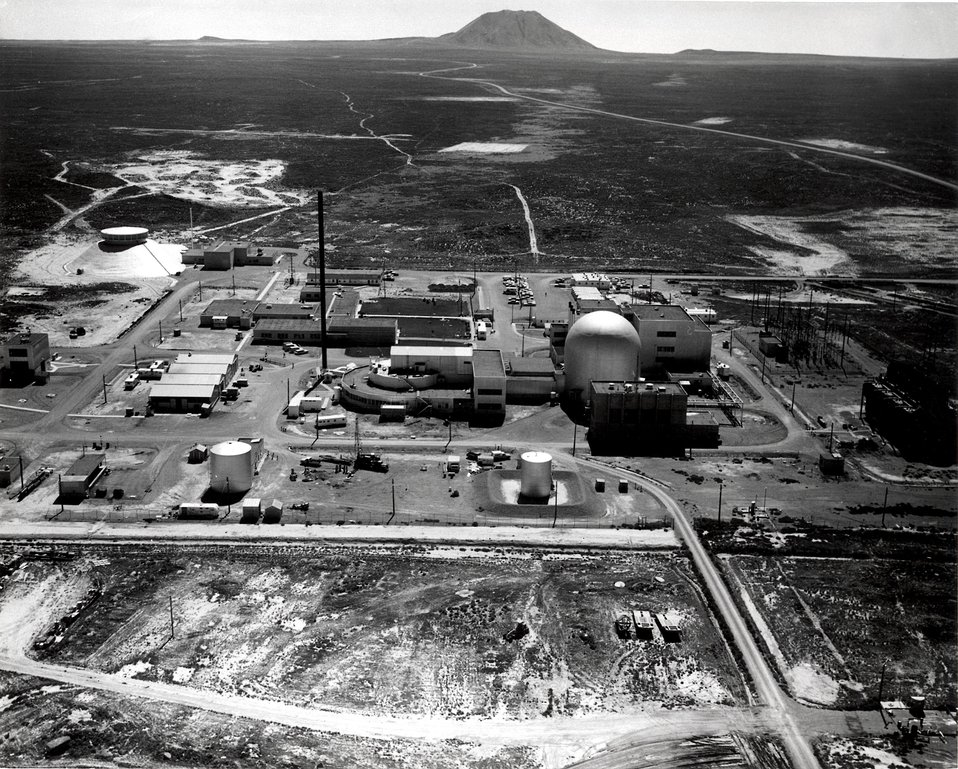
EBR-2 is being used as a primary irradiation test facility for fuels and materials used in the liquid metal fast breeder reactor program pending the planned 1973 completion of the First Flux Test Facility in Washington.
c.1971